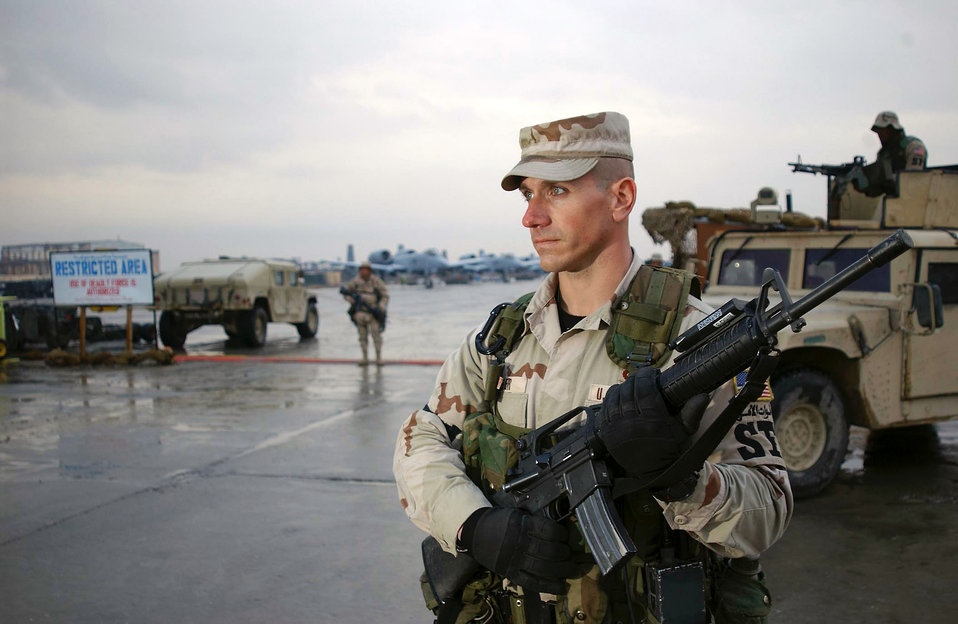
Bagram duty has its hazards

OPERATION ENDURING FREEDOM -- Staff Sgt. Michael Schieber guards one of the entry control points to the airfield at the Bagram Air Base, Afghanistan. He is deployed to the 455th Expeditionary Security Forces Squadron from the 824th SFS at Moody Air Force Base, Ga.